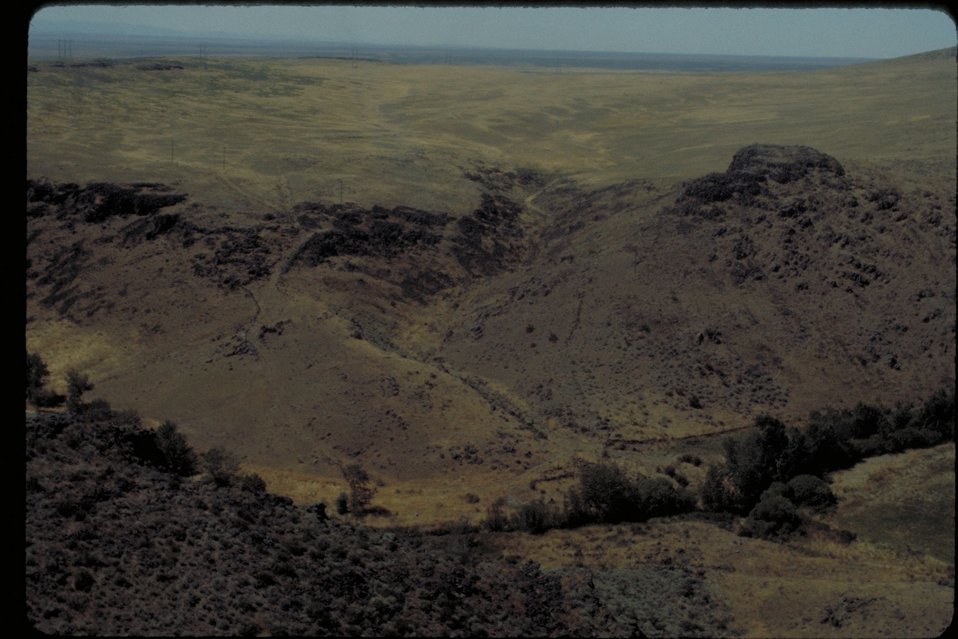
Oregon Trail crossing of Canyon Creek Lower Snake River District